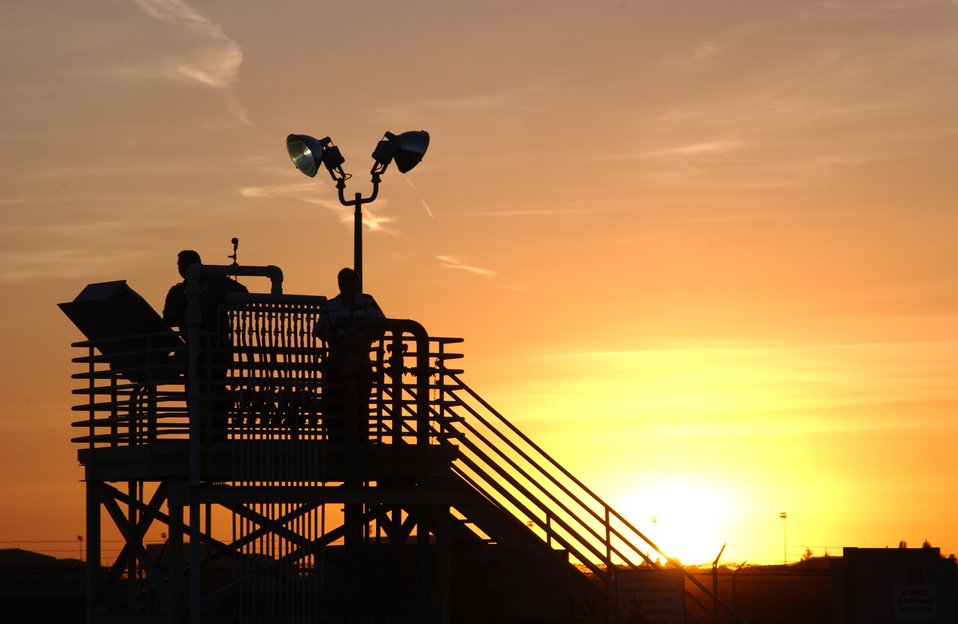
Fiery sunset

FAIRCHILD AIR FORCE BASE, Wash. -- Firefighters adjust propane levels to change the type of burn for a simulated aircraft fire during training here recently. Real-world fire training is conducted several times a month to ensure firefighters are prepared to respond to any type of incident. The firefighters are assigned to the 92nd Civil Engineer Squadron.